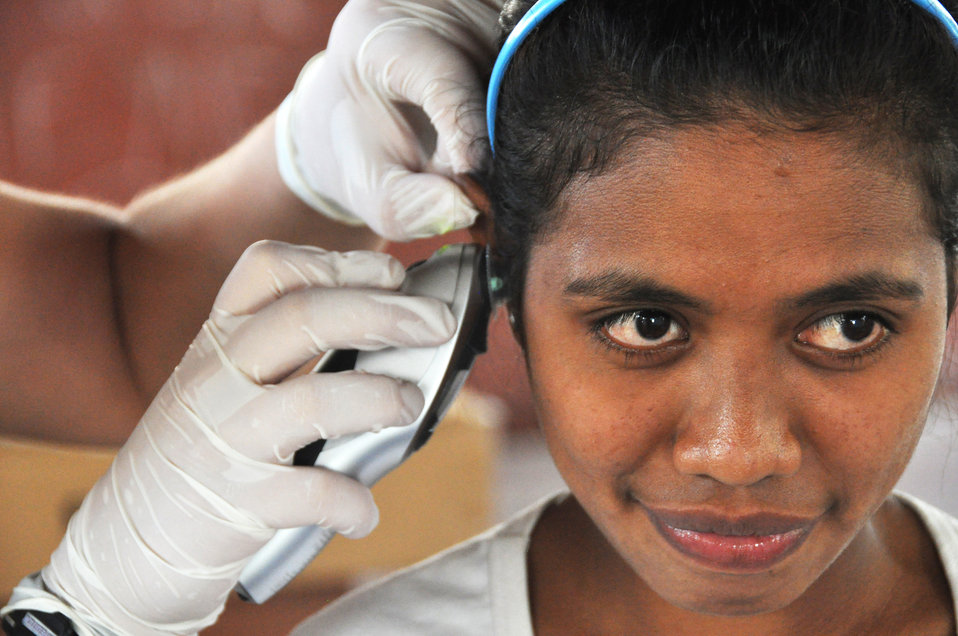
Airmen help hundreds in Timor Leste

A young East Timorese woman's ear is checked by Senior Airman Ashley Cope during inprocessing at a clinic July 16 in Dili, Timor Leste. Airman Cope is assigned as a labor and delivery technician to the 3rd Medical Group at Elmendorf Air Force Base, Alaska. East Timorese and U.S. officials set up the clinic as part of Operation Pacific Angel 2009, a Pacific Air Forces humanitarian assistance operation led by 13th Air Force at Hickam AFB, Hawaii.